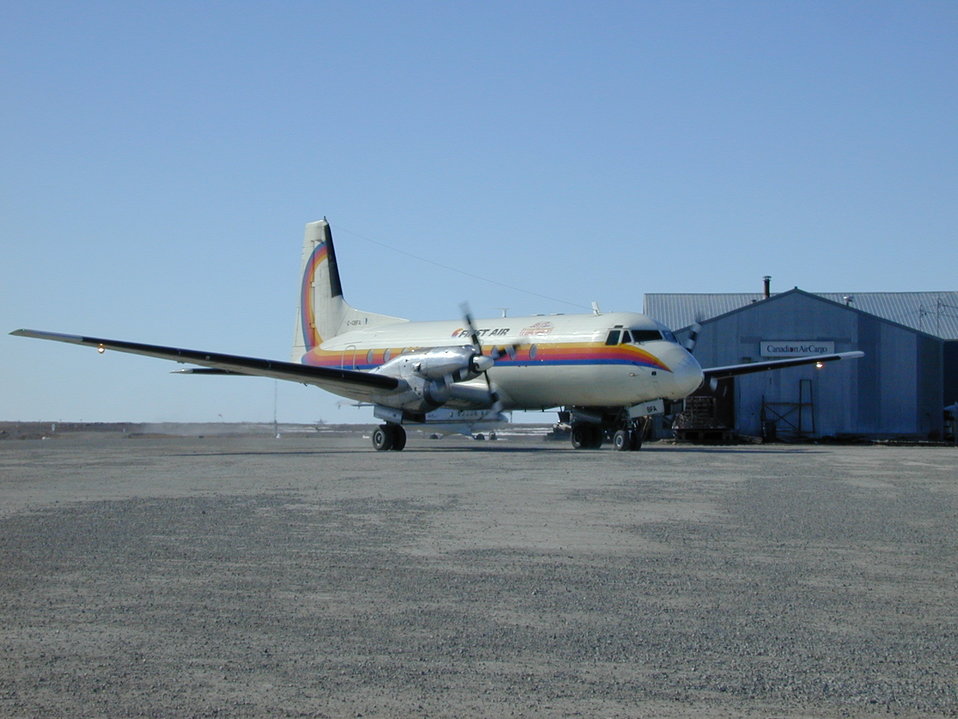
C-GBFA First Air HS748 (A748) Aircraft no longer registered in Canada Picture taken 14th June 1999 at 18:46 MDT (15th June 1999 00:46Z) at Cambridge Bay Airport, Nunavut, Canada